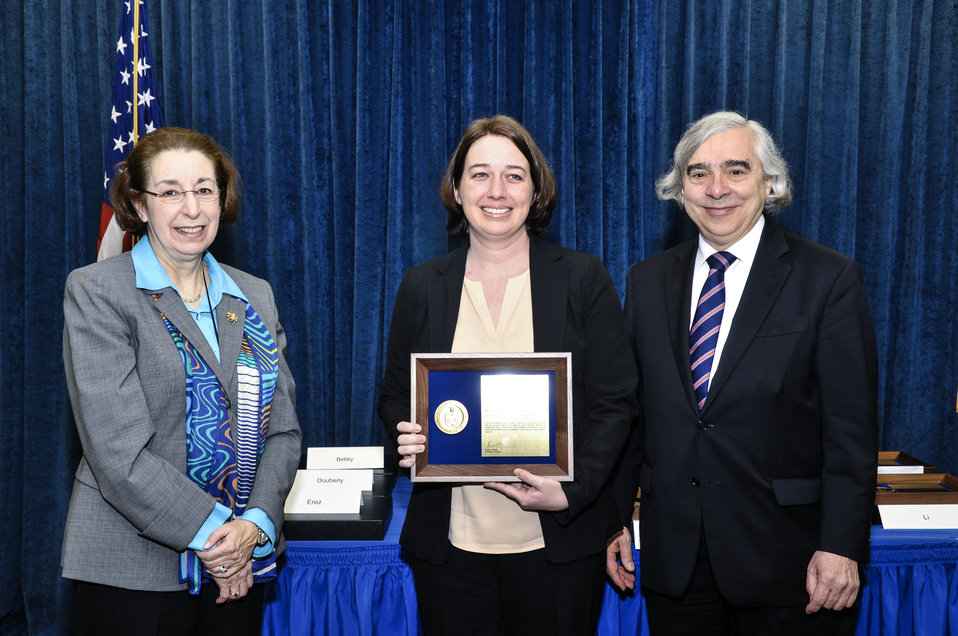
PECASE Awards: DOE Secretary E. Moniz with DOE Office of Science Acting Director Pat Dehmer, PECASE Awardee Jennifer Leanne Reed on April 14, 2014